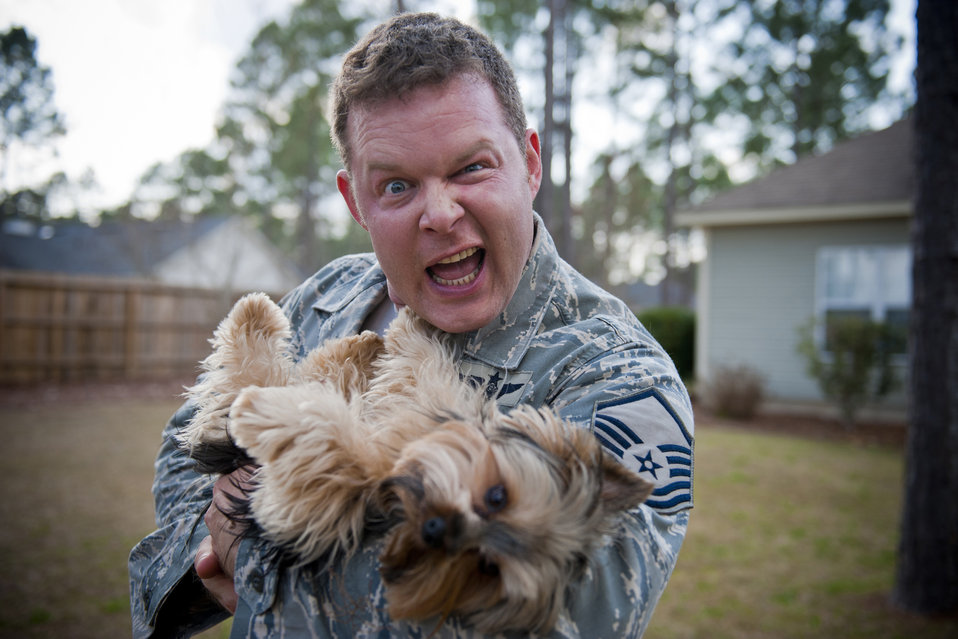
Master Sgt. Robert Disney strikes a pose with his dog, Wall-E, Feb. 24, 2011, at his home. Of his three dogs, Wall-E is his favorite because he is the only male. Sergeant Disney is the 347th Rescue Group standards and evaluations superintendent.